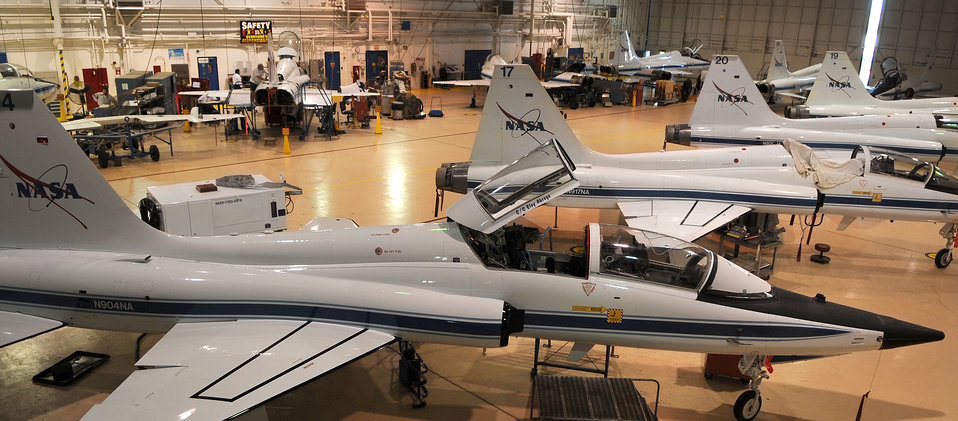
NASA trains pilots to fly high

NASA T-38s are parked inside a maintenance hangar Dec. 2 at Ellington Field, Texas.